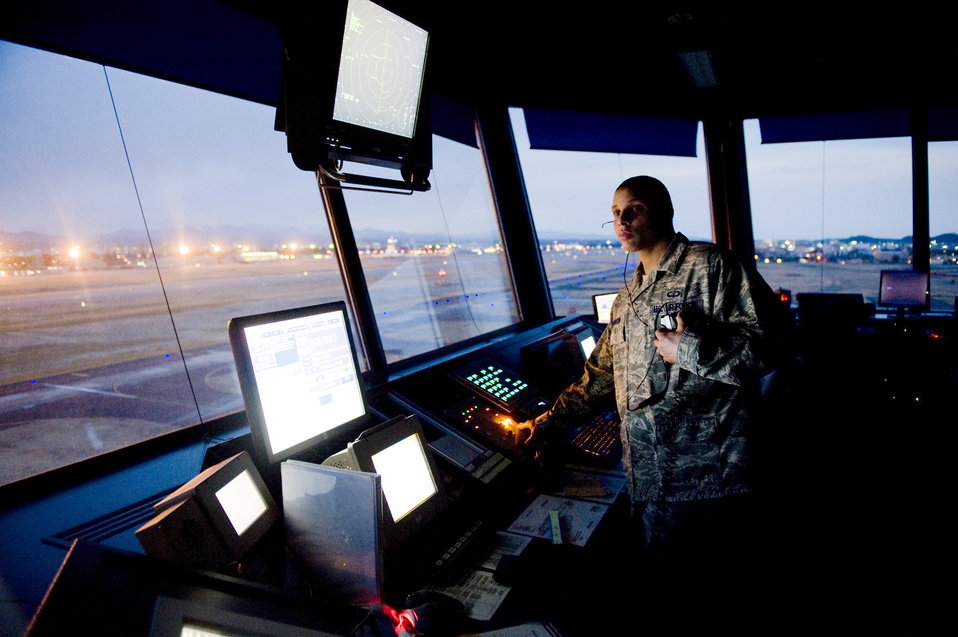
Yokota ATC Operation Tomodachi

Senior Airman Nissean Johnson watches the flightline and sky for incoming and outgoing aircraft March 24, 2011, at Yokota Air Base, Japan. Yokota AB's flightline has received more than triple the normal amount of aircraft due to Operation Tomodachi. The military and civilian aircraft have been from multiple nations carrying supplies, personnel and equipment in direct support of bringing relief efforts and trying to minimize human suffering following an earthquake and tsunami March 11. Airman Johnson is an air traffic controller assigned to the 374th Operations Support Squadron.